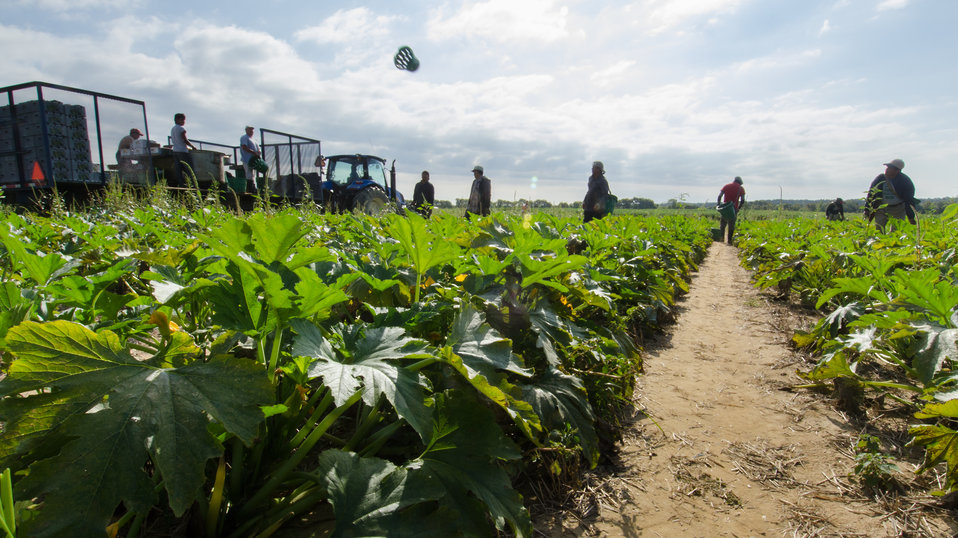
Migrant workers harvest green zucchini squash from rows of plants at Kirby Farms in Mechanicsville, VA on Friday, Sep. 20, 2013. The squash is then transferred to the processing crew for washing and packaging for shipment to wholesalers. Kirby Farms a third-generation family farm that covers 500 acres and generates produce and grains on a year-around operation.